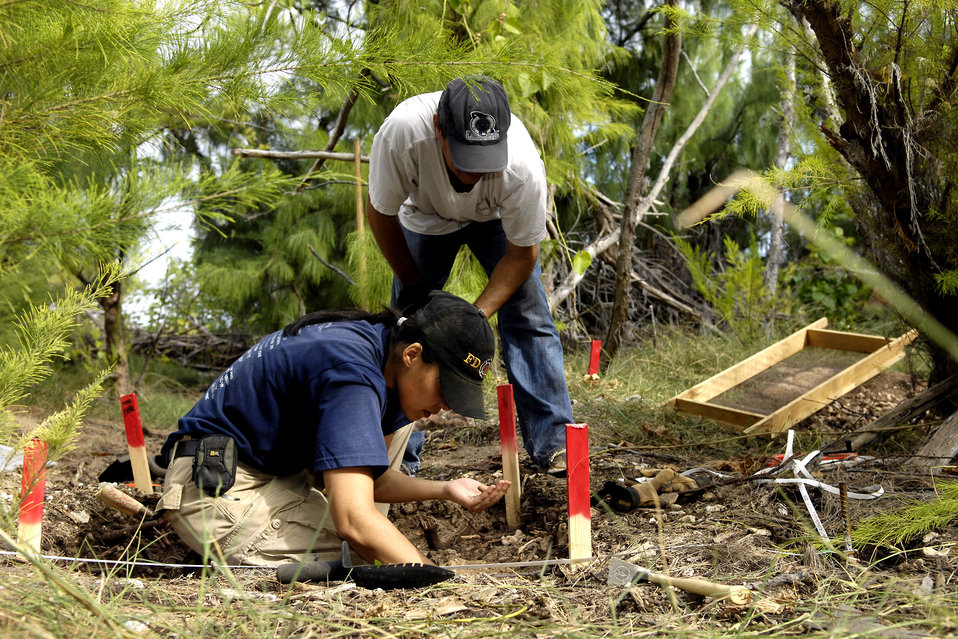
Servicemembers search for POW/MIAs on Wake Island

Greg Berg and Denise To excavate a dig site Jan. 12, 2008 on Wake Island. Mr. Greg and Ms. To, forensic anthropologists, were sent to do a site survey after Wake Island officials notified the Joint POW/MIA Accounting Command of bones located on the island. JPAC officials are charged with achieving the fullest possible accounting of all Americans missing as a result of past conflicts.